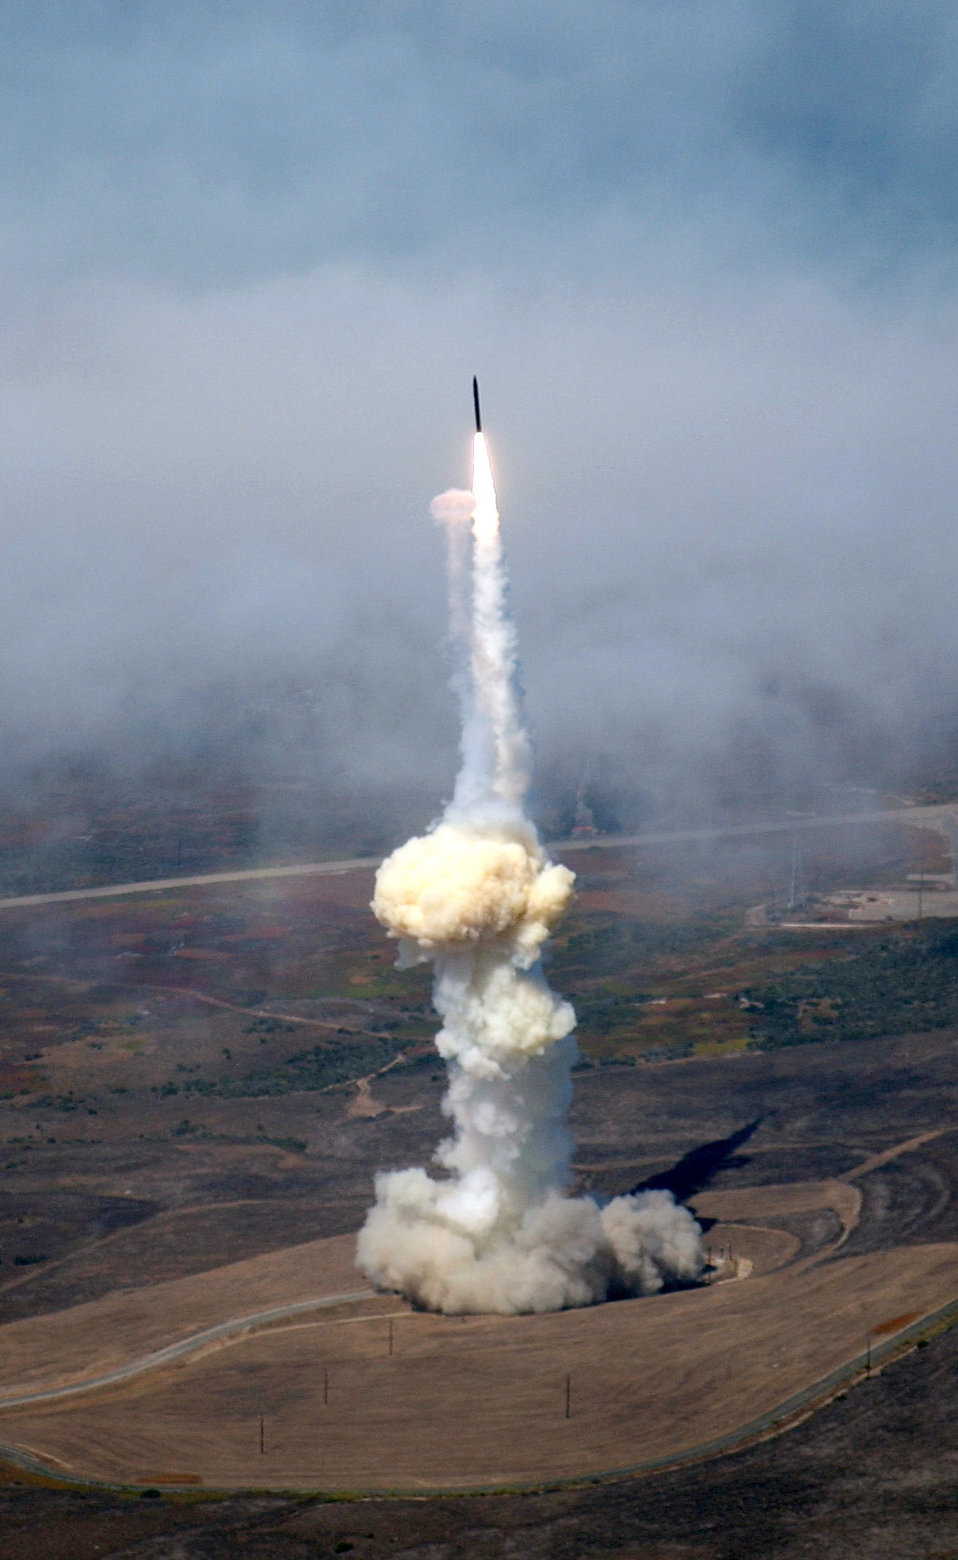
Blast off

VANDENBERG AIR FORCE BASE, Calif. -- A ground-based interceptor prototype booster successfully launched from here Aug. 16, supporting the Ground-based Midcourse Defense program of the Missile Defense Agency.